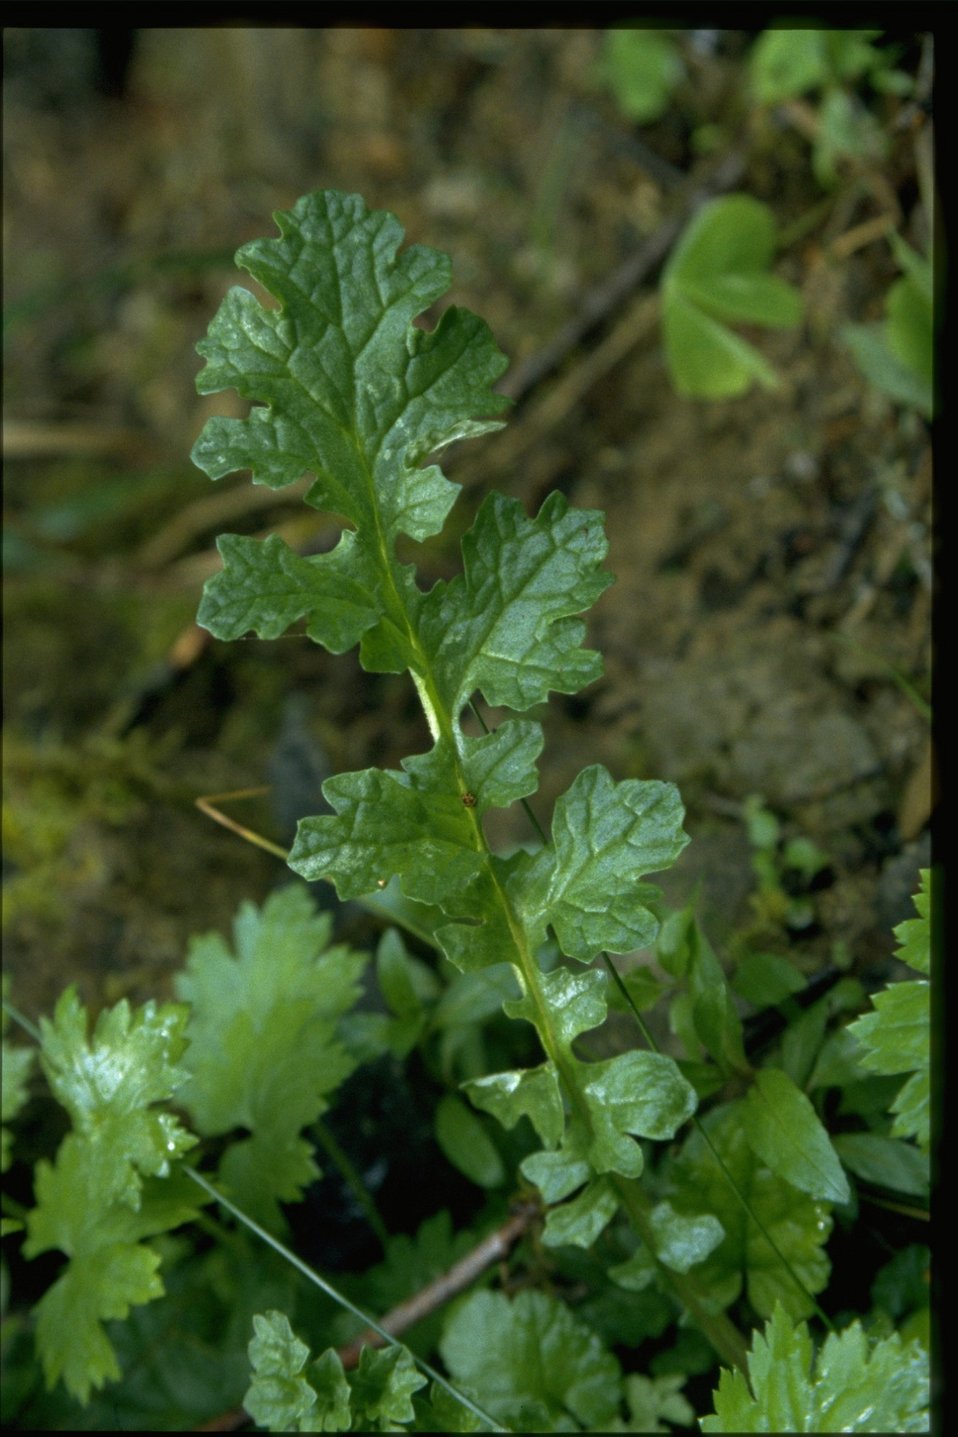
Leaf.